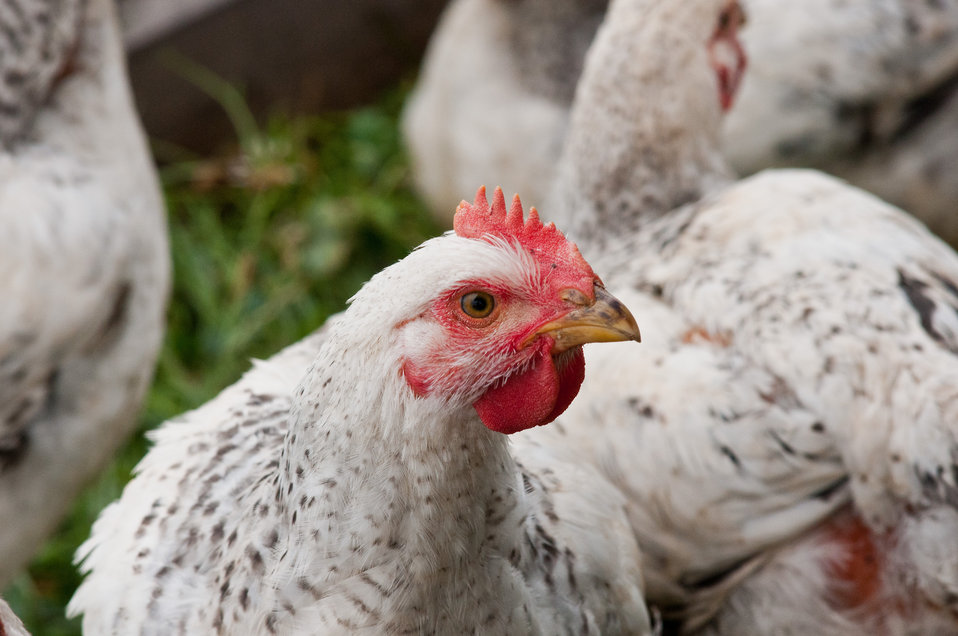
Broiler chickens graze on organic pastures and live in pens that protect them from predators, direct sun light, and wind at Nick’s Organic Farm, owned by Nick Maravell in Adamstown, MD on Friday, July 12, 2013. The enclosures are light enough to be moved by hand, each day, one consecutive section at a time. This allows the pasture to easily recover from the grazing. The farm produces Black Angus beef, chicken, turkey, eggs, hay, soybeans, corn, alfalfa, orchard grass, rye; and other crops. The cattle are100% grass-fed receiving certified organic pasture, certified organic hay (in winter), water and mineral salts mixed with sea kelp. The cattle are not fed hormones, antibiotics or animal products. Poultry feed from grain is ground from organic grain. The poultry also graze on organic pastures. The farm has conducted on-farm research with federal, state and non-profit agencies to refine organic practices. An organization such as the U.S. Department of Agriculture (USDA) Agricultural Research Service (ARS) center in Beltsville has been able to conduct research to improve organic crops and to breed and manage the cattle so that they have.